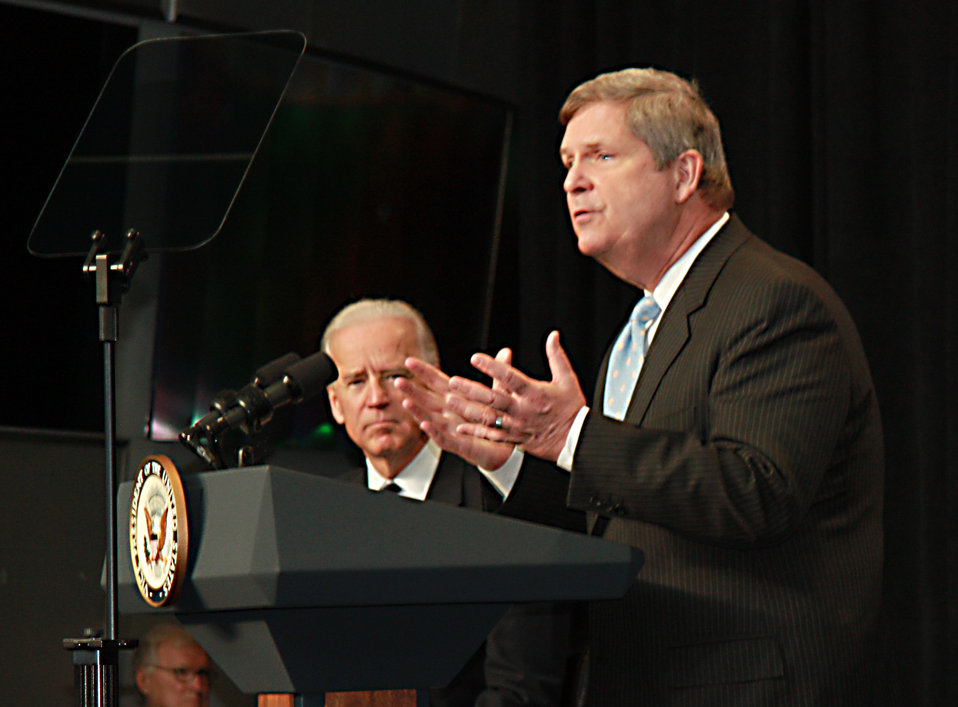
Agriculture Secretary Tom Vilsack and Vice President Joe Biden spoke to a large gathering of students and faculty about the important role manufacturing has in the future success of our country at An America Built to Last event at Iowa State University on Thursday, March 1, 2012 in Ames, IA.